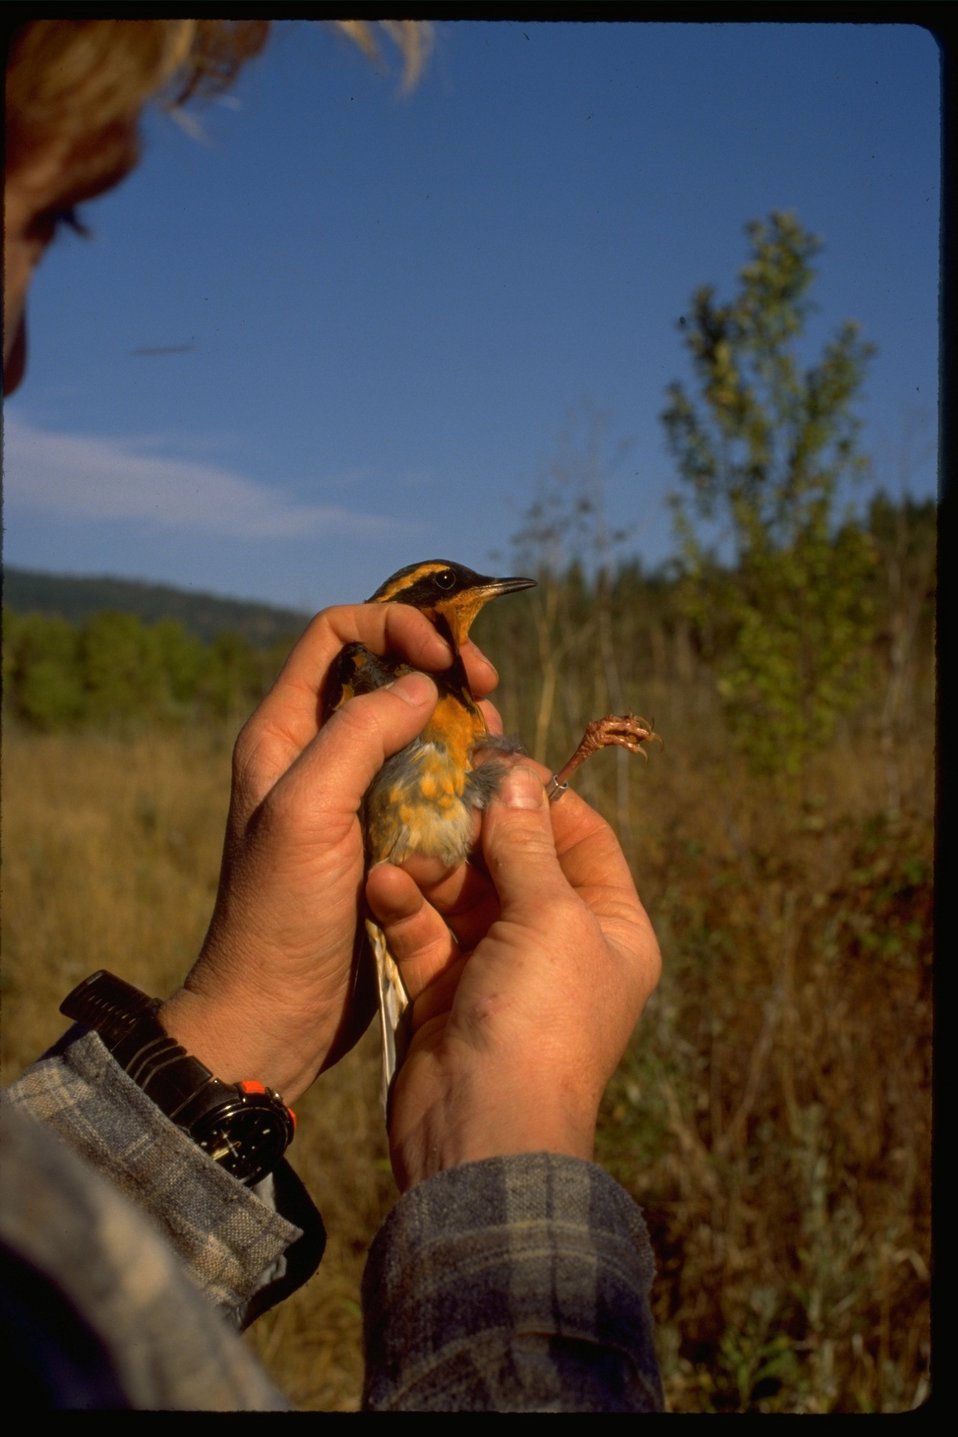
A bird biologist is banding a Varied Thrush (Ixoreus naevius).